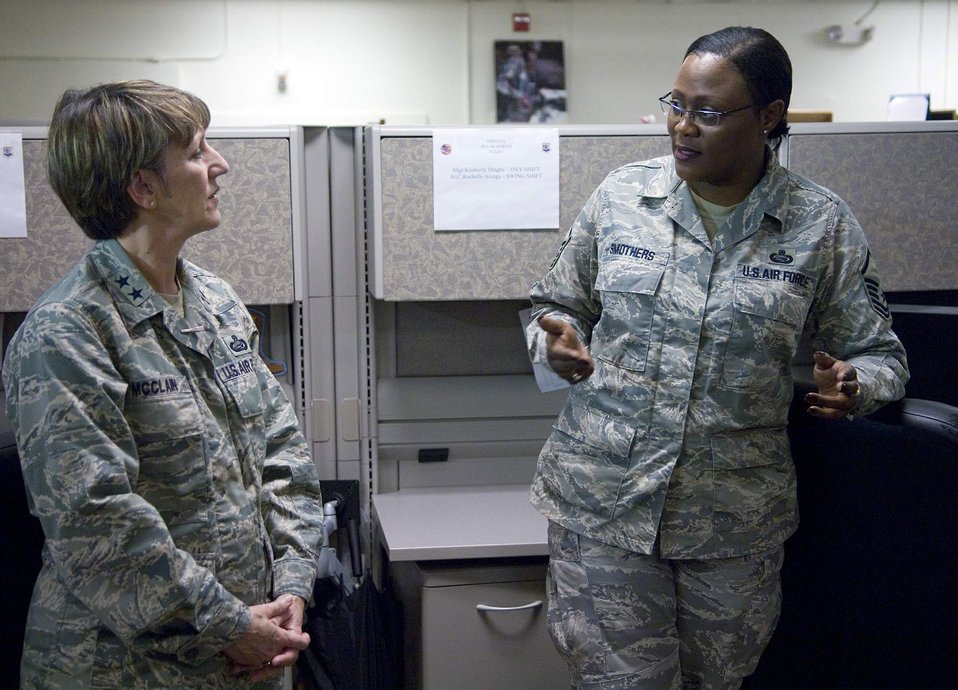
AFPC general talks about woman in the military

Maj. Gen. K.C. McClain talks with Master Sgt. Teresa Smothers March 18 at the Air Force Personnel Center's 24-hour-operations center. General McClain is the commander of the AFPC at Randolph Air Force Base, Texas. She is AFPC's 23rd commander and a 30-year-career Airman. AFPC members are responsible for developing personnel programs, implementing personnel policies and conducting personnel operations for 1.25 million Air Force military, civilian and retirees worldwide. The unit has 2,200 members.